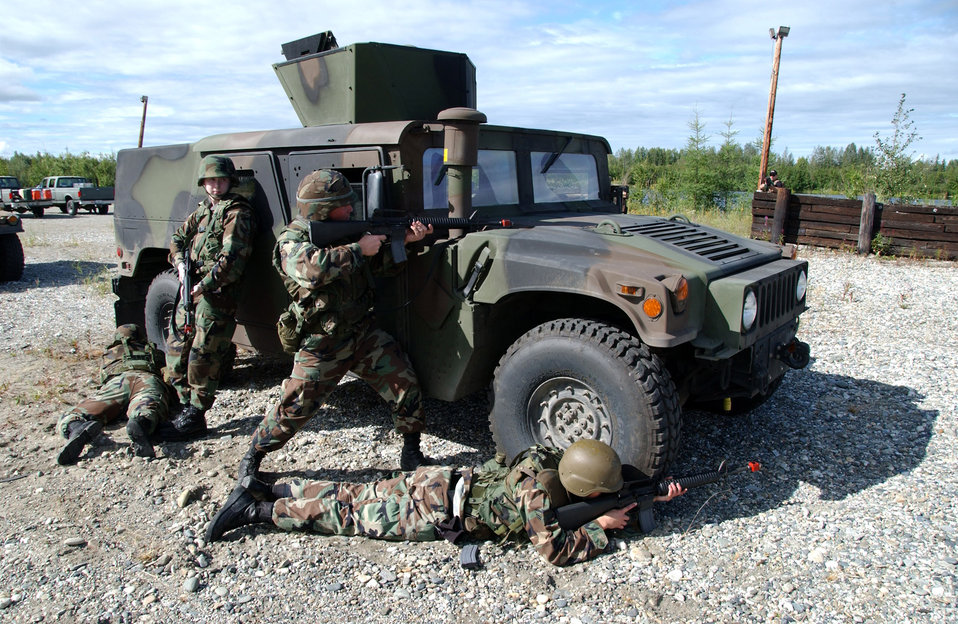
Air warriors train for deployment

Four Airmen demonstrate where to position themselves after exiting a Humvee during combat skills training Aug. 3 at Eielson Air Force Base, Alaska. This training gives Airmen the skills necessary to perform and adapt in a combat environment while deployed.